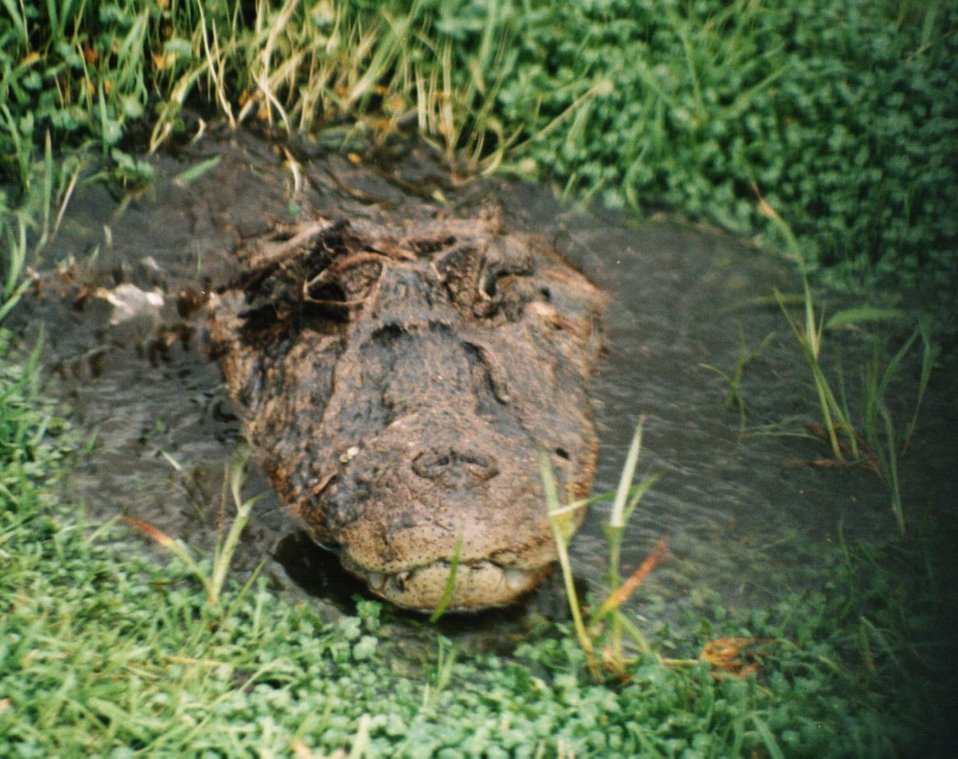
Broad-snouted caiman

Photo Credit: Alejandro Larriera, Medical Veterinarian

Deputy Chairman Crocodile Specialist Group
Crocodile Specialist Group/Species Survivial Commission/IUCN

Director General de Manejo de Fauna y Flora
MASPyMA, Argentina